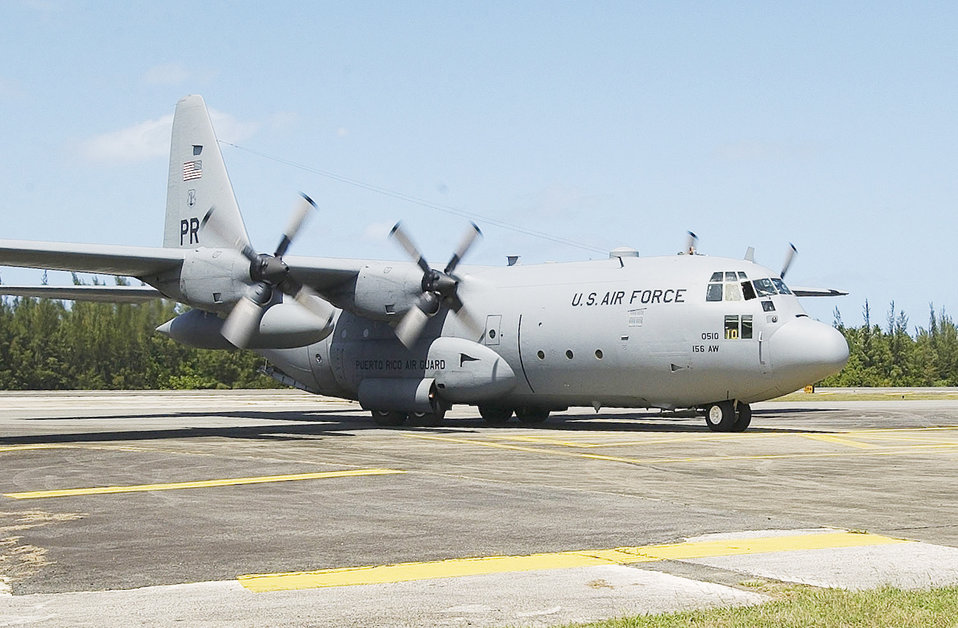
Guardsmen ready to help in Haiti

A C-130 Hercules from the Puerto Rico Army National Guard prepares to takeoff in 2007. Puerto Rico Air Guard officials have called up two C-130 aircraft from the 156th Airlift Wing with 21 support personnel to assist with humanitarian aid in Haiti.